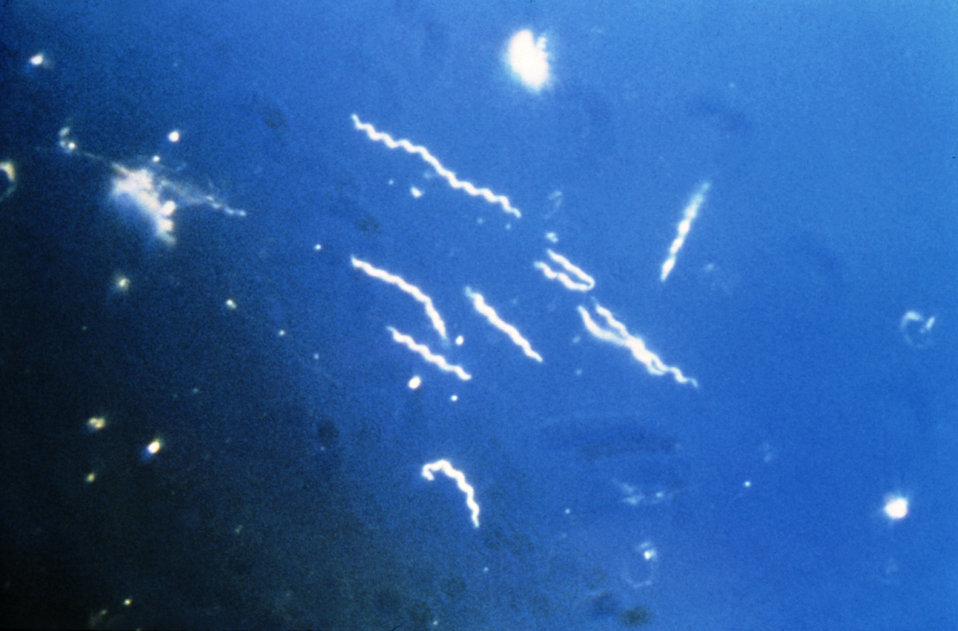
Using darkfield microscopy technique, this photomicrograph, magnified 400x, reveals the presence of spirochete, or 'corkscrew-shaped' bacteria known as Borrelia burgdorferi, which is the pathogen responsible for causing Lyme disease.